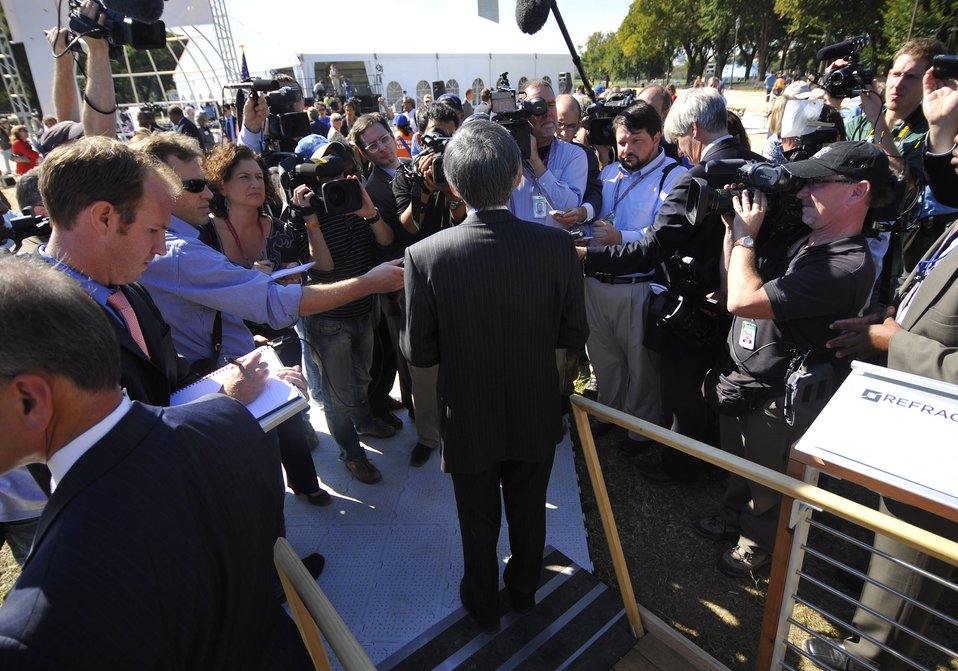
Solar Decathlon 2009 on the National Mall, with Sec. Chu

Solar Decathlon 09